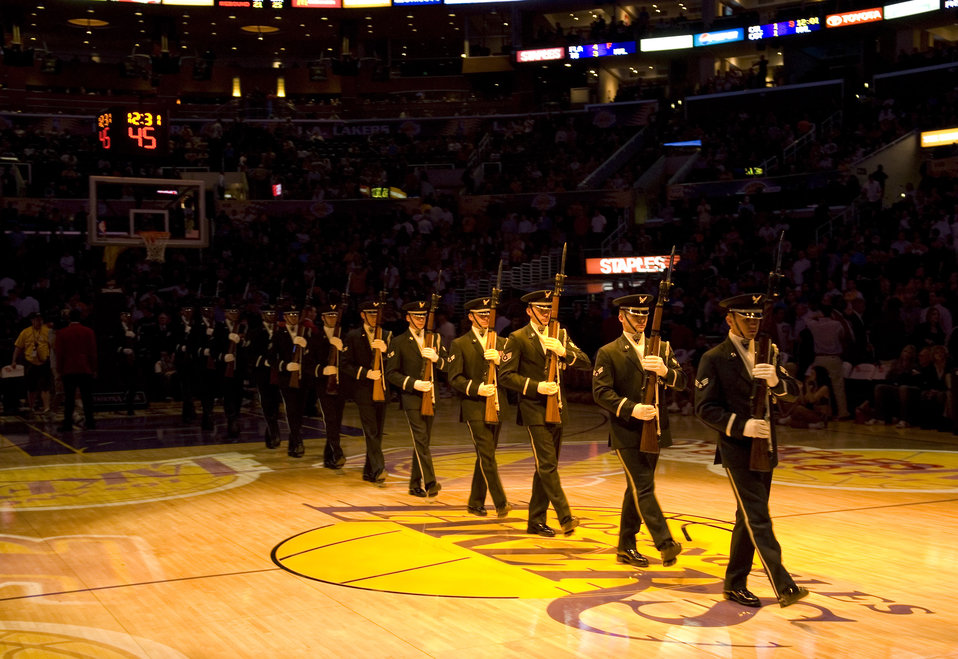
Air Force takes center stage as Bulls visit Lakers

The Air Force Honor Guard drill team performs during a nationally telecast basketball game in front of nearly 20,000 fans Nov. 18 at the Staples Center in Los Angeles.